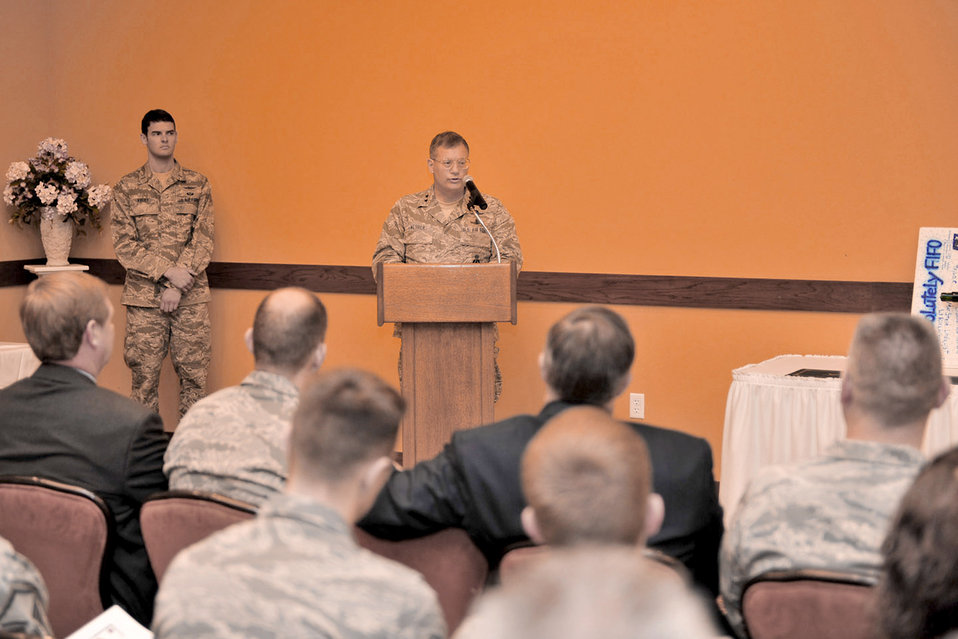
Initial cyber INWT class graduates

Maj. Gen. Richard Webber speaks to Intermediate Network Warfare Training graduates March 31, 2011, at Hurlburt Field Air Force Base, Fla. The graduation marks the first INWT class and serves as initial-qualification training for cyber defense operators. General Webber is the 24th Air Force commander.